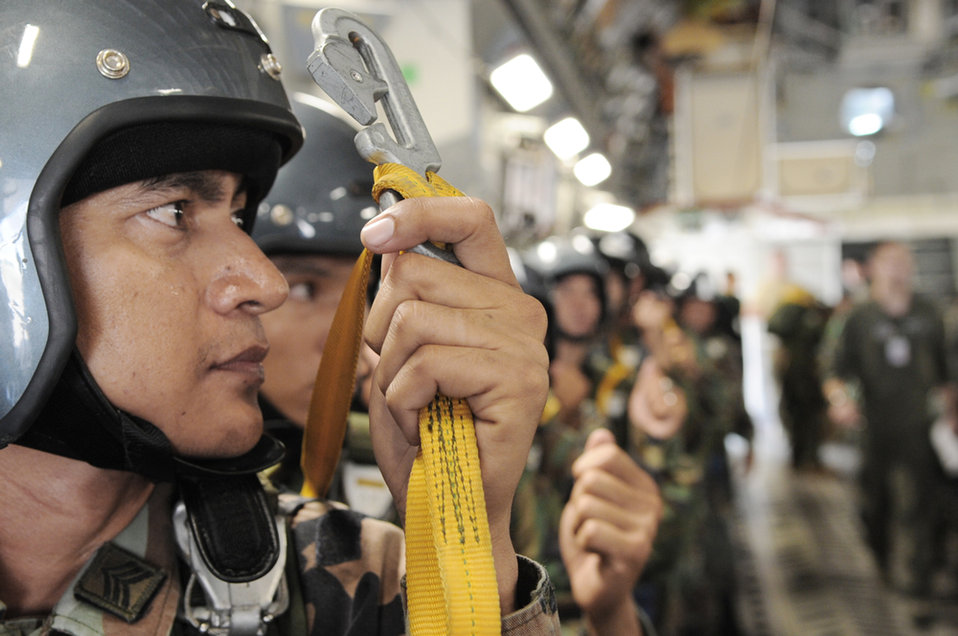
COPE TIGER 2010

A member of the Royal Thai Air Force Parachute Team gets ready for his 10,000-foot static-line jump from a C-17 Globemaster III during Cope Tiger 2010 at Dom Muang Royal Thai Air Force Base, Thailand, March 3, 2010. Cope Tiger is a multilateral, combined and joint command post and field training exercise involving the United States, Thailand and Singapore. The exercise takes place March 1-12.